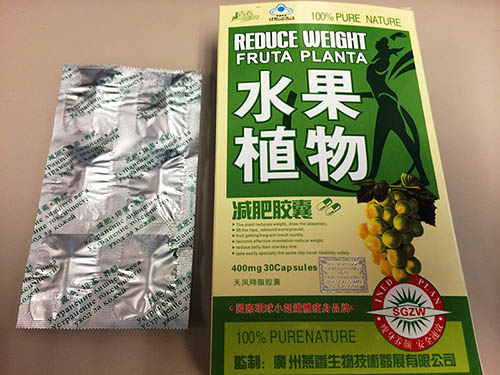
RECALLED – Dietary Supplement

February 4, 2014 – Product Recall – MyNicKnaxs, LLC. Issues a Voluntary Nationwide and International Recall of All Weight Loss Formulas of Reduce Weight Fruta Planta.